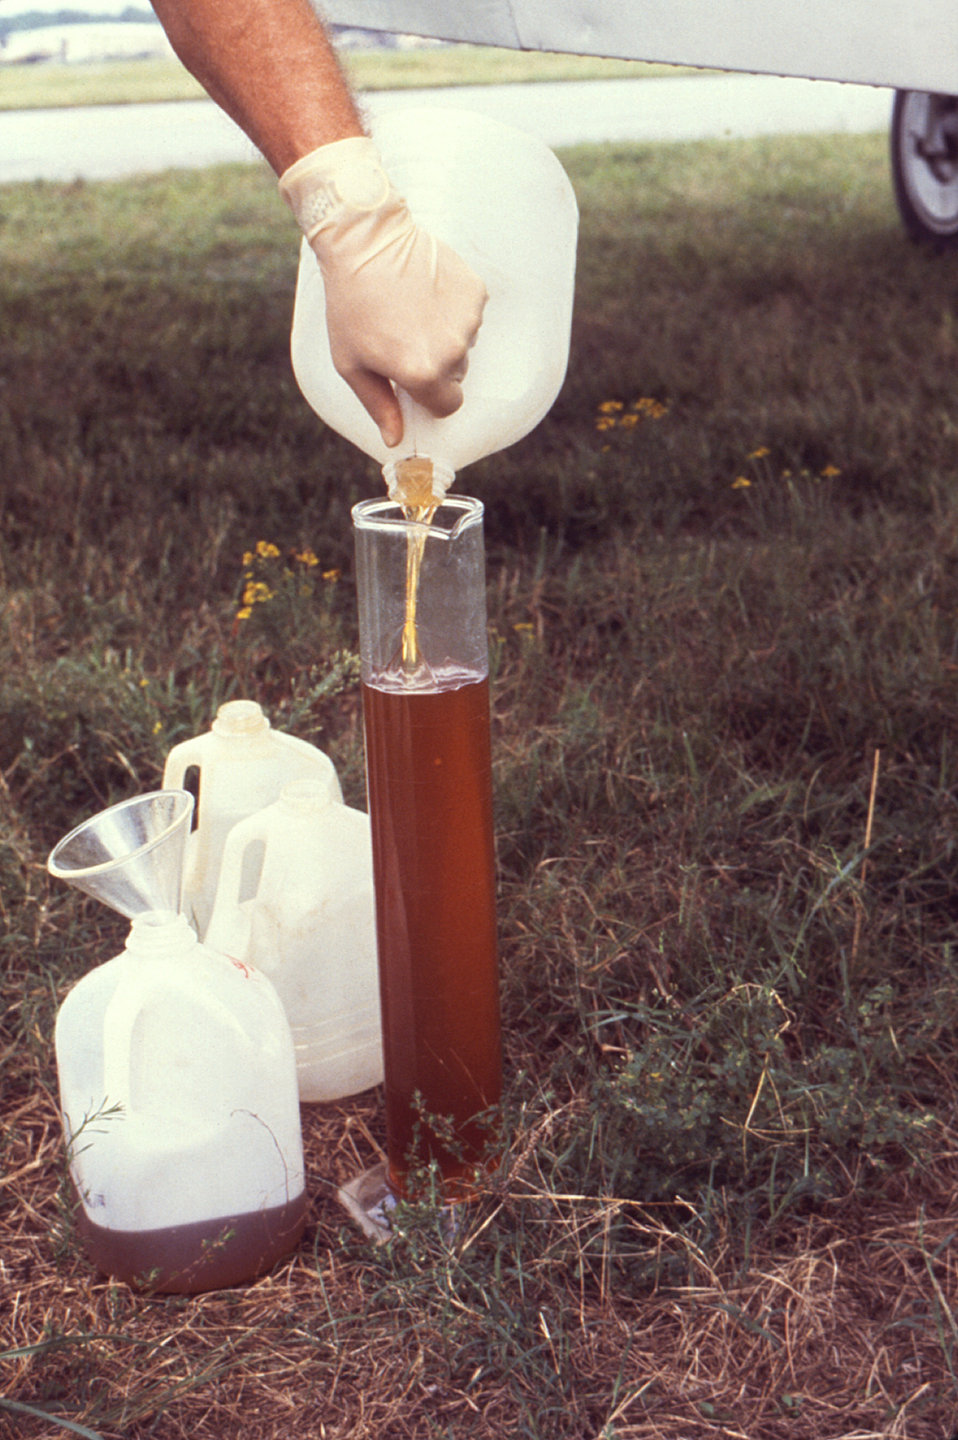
This 1981 photograph depicts a vector-control field technician measuring the contents from a one gallon plastic container used to catch the insecticidal spray emitted from an aircraft-mounted spray nozzle for purposes of calibrating the spray flow.